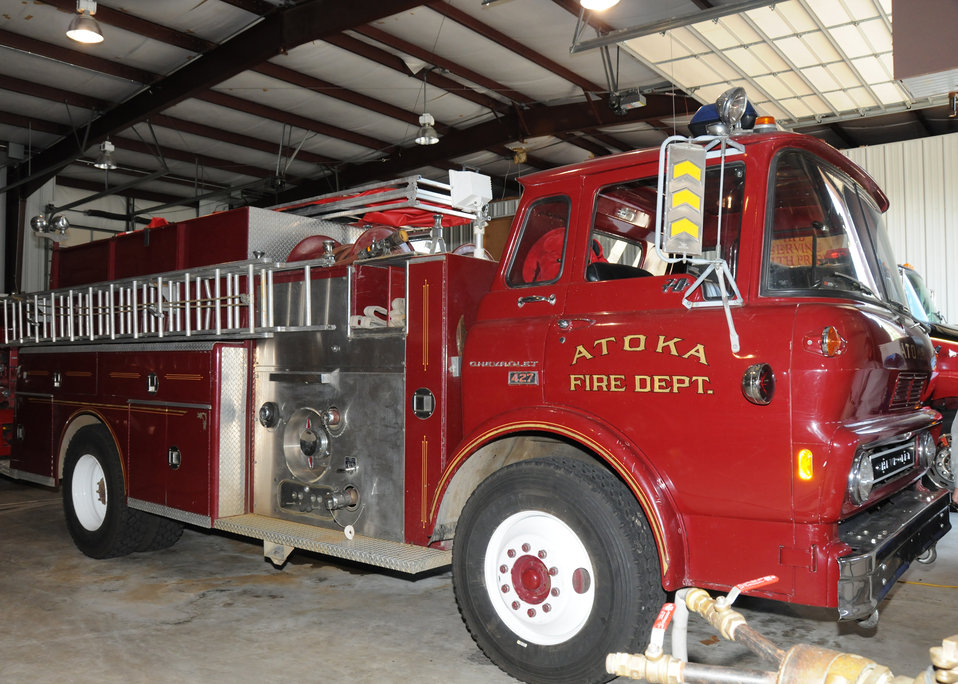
The Atoka Fire Department received American Recovery and Reinvestment (ARRA) funds ($70,500.00) to purchase a refurbished tanker truck. This will enable the Atoka Fire Department to have water available in remote areas to fight fires in Atoka, OK.